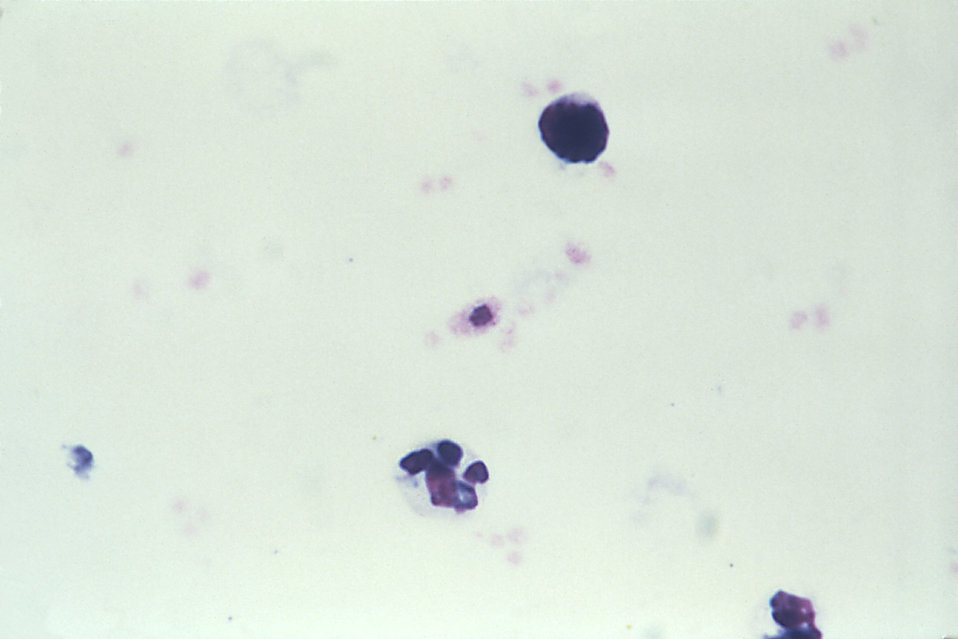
This micrograph reveals an artifact, which resembles a Plasmodium falciparum gametocyte.